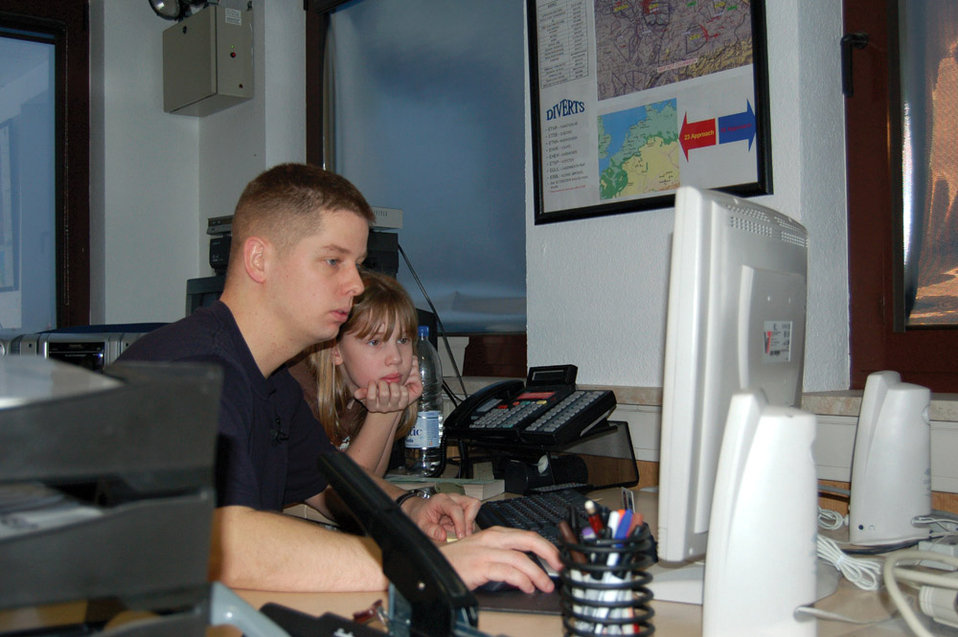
National Job Shadow Day

Tech. Sgt. Donald Odom shows his daughter Mackenzie the computer program he uses to create a weather report called a mission execution forecast. Mackenzie spent National Job Shadow Day Feb. 2 with her father learning about his job. Sergeant Odom is a weather forecaster with the 52nd Operations Support Squadron at Spangdahlem Air Base, Germany.